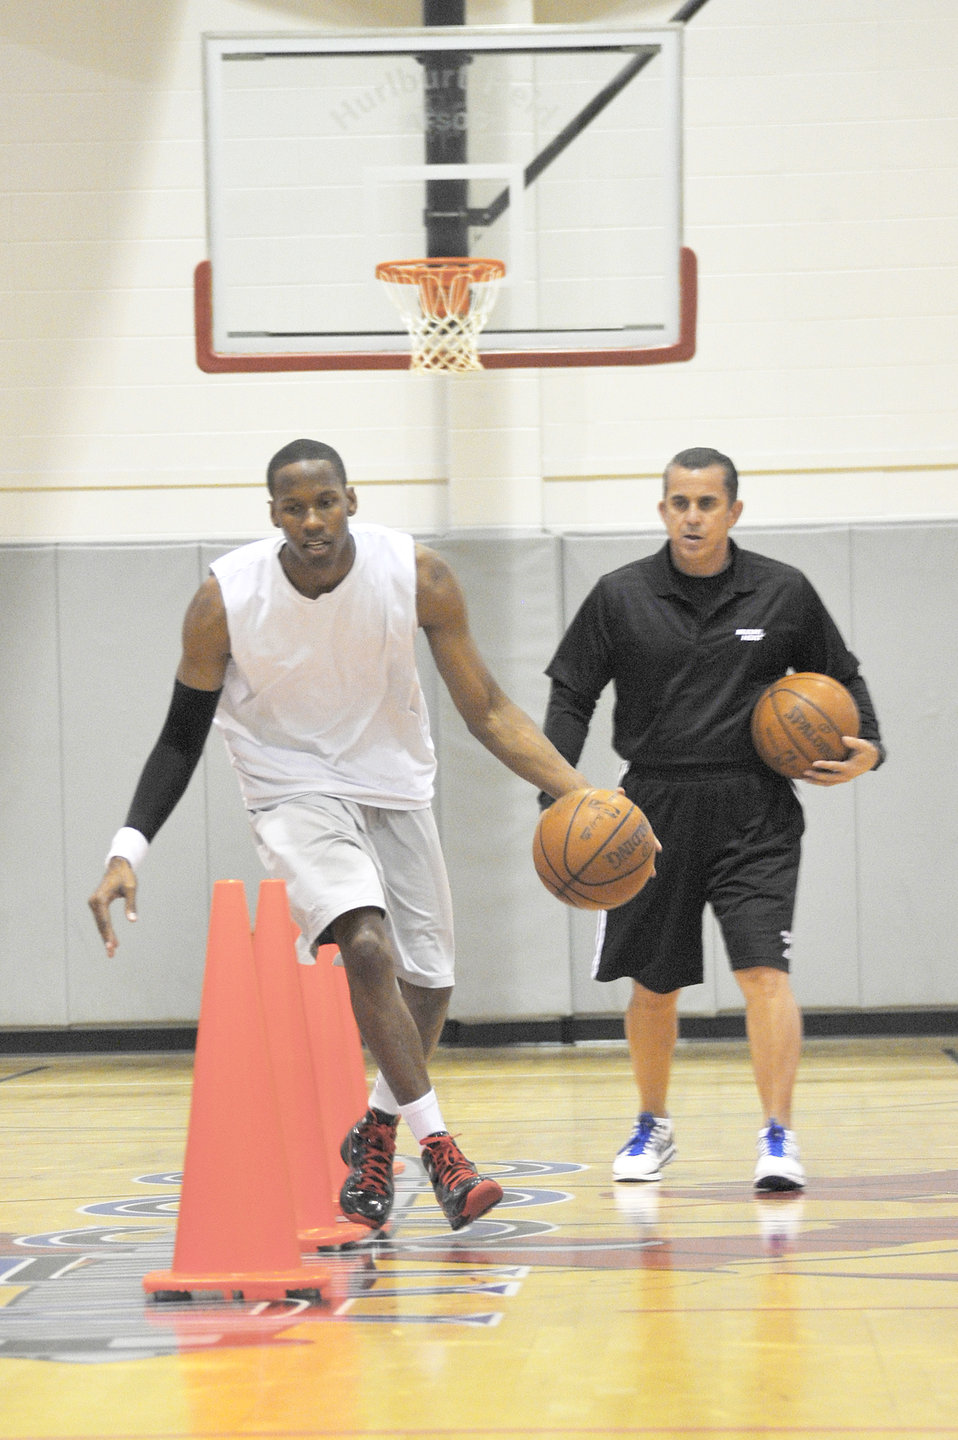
Antoine Hood

Capt. Antoine Hood works on his crossover dribble as Octavio DeLagrana looks on during a workout session at Sept. 29, 2010, Hurlburt Field, Fla. Captain Hood played college basketball at the Air Force Academy from 2002 through 2006 and after graduation played briefly with the NBA's Denver Nuggets. Captain Hood is assigned to the 919th Special Operations Wing and Mr. DeLagrana is a Miami Heat player development coach.